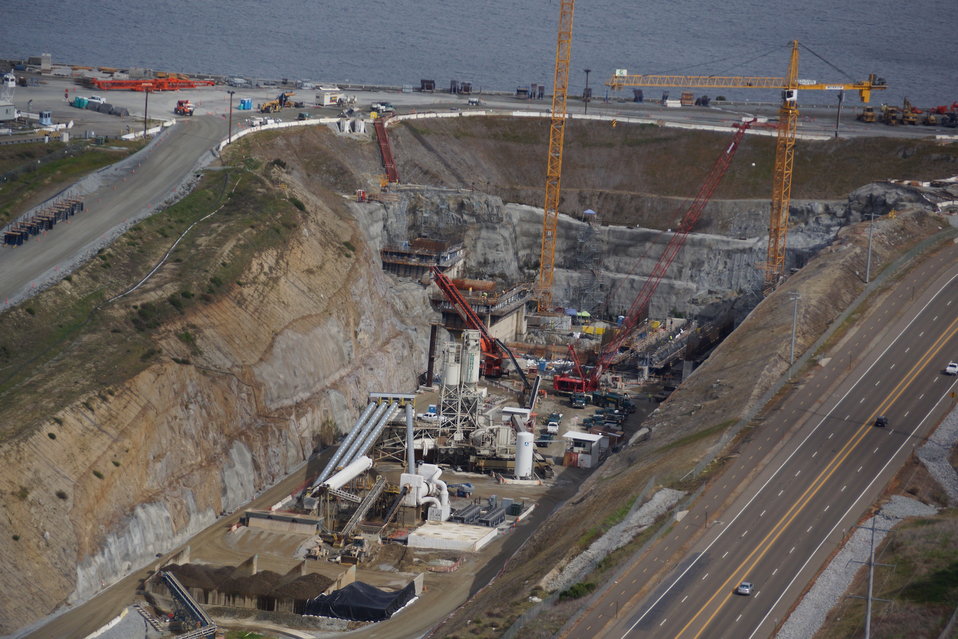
Aerial View of Folsom Dam Auxiliary Spillway

An aerial view shows the entire construction site of the Folsom Dam auxiliary spillway March 6, 2013. Excavation began in 2011 to remove 3.5 million cubic yards of rock and soil from the site. In 2012, the first steel and concrete were placed for the control structure—essentially a second dam—that will stand as tall as the Statue of Liberty when completed. The completed dam and chute will include 350,000 cubic yards of concrete, enough to line up concrete trucks from Sacramento to Los Angeles, and 24 million tons of steel, enough to build two Eiffel Towers. The project is estimated to be completed by October 2017 and is one piece of a larger plan to help the Sacramento region reduce the risk of flooding to a one-in-200 chance for flooding in any given year.